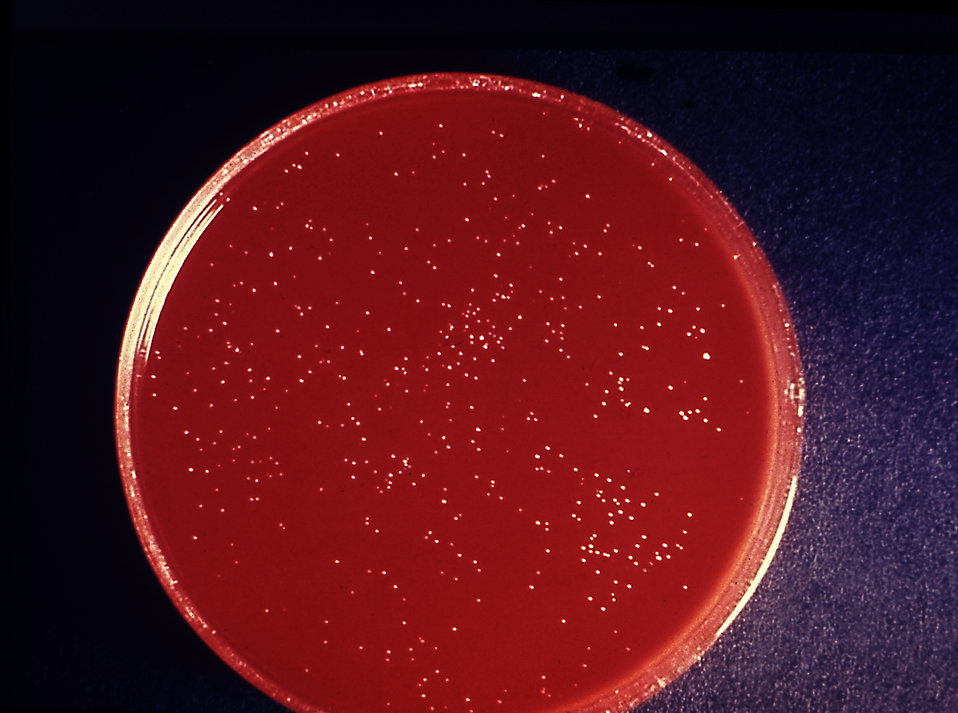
This blood agar culture plate is growing colonies of Yersinia pestis microorganisms at 48 hours.